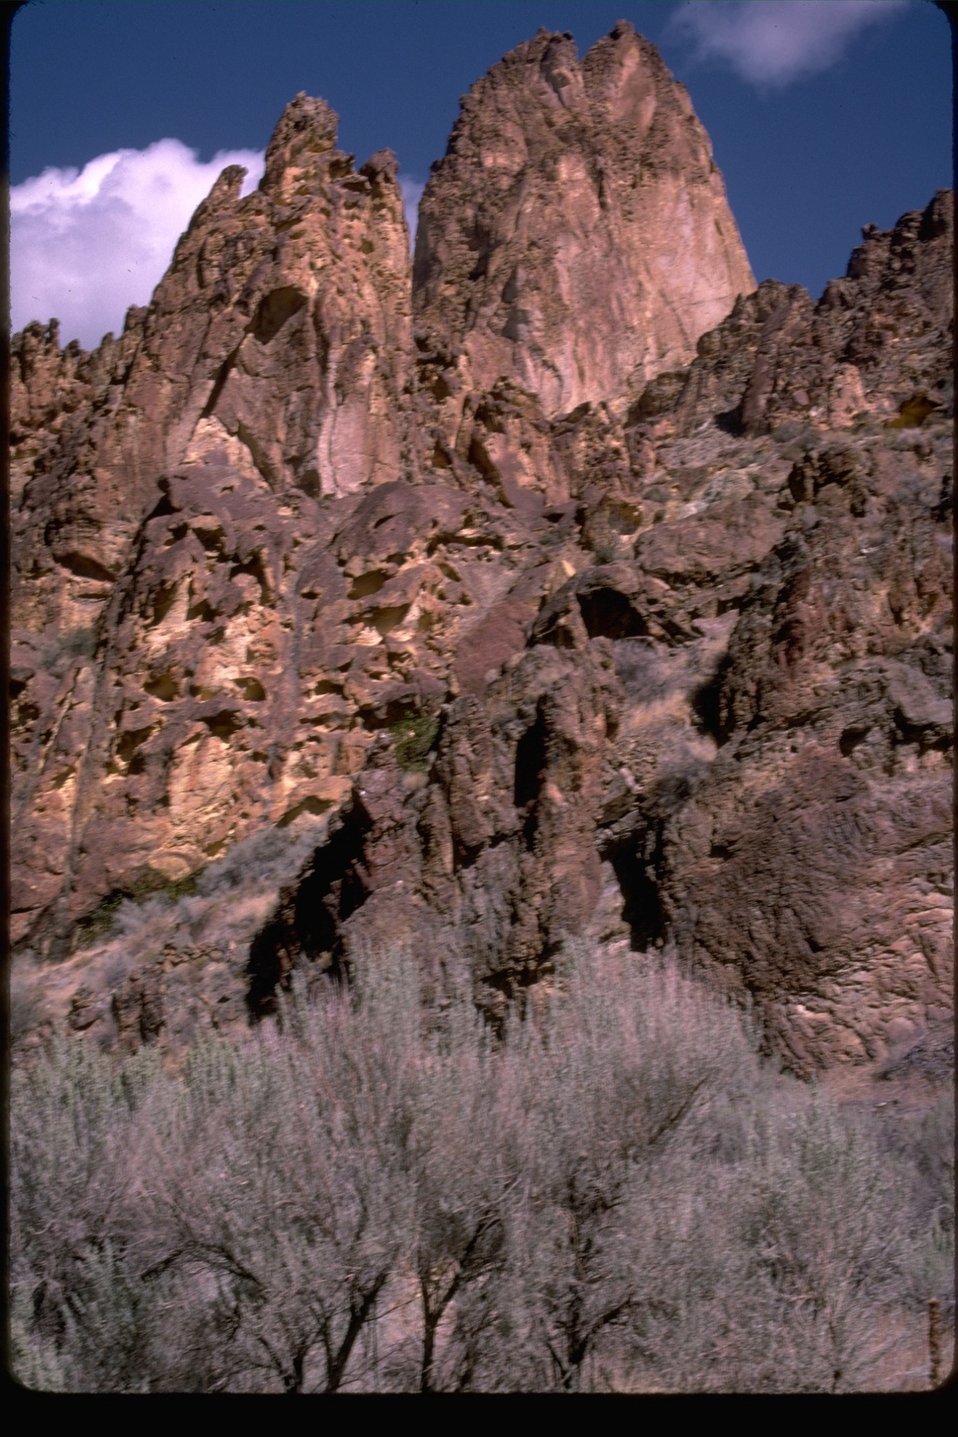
The rocky peaks and towers in the Slocum Creek Wilderness Study Area. OR 3-75.